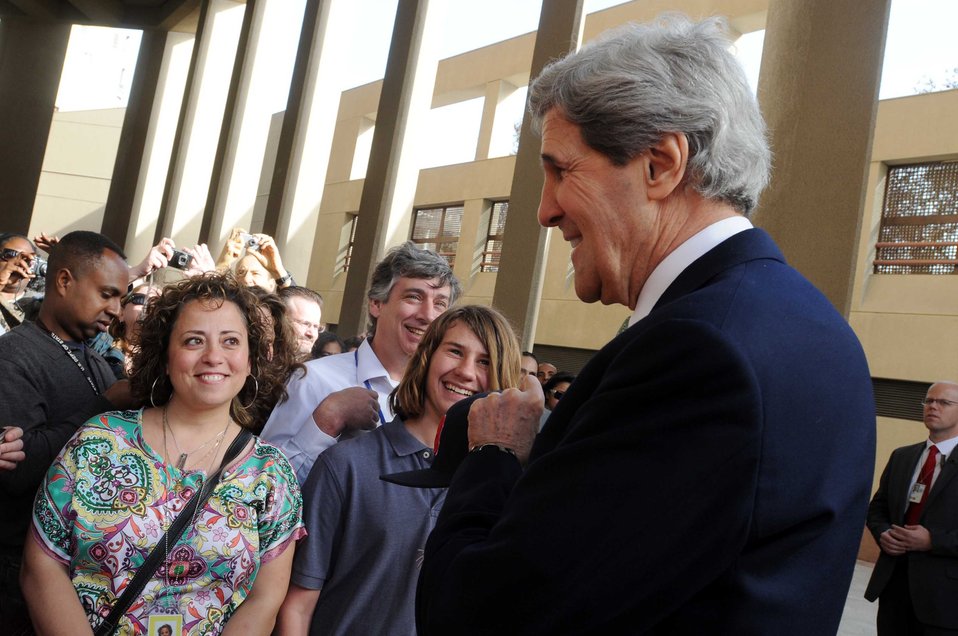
Secretary Kerry Meets With Embassy Cairo Staff and Families

U.S. Secretary of State John Kerry meets with the staff and families of the U.S. Embassy in Cairo, Egypt, on March 3, 2013.